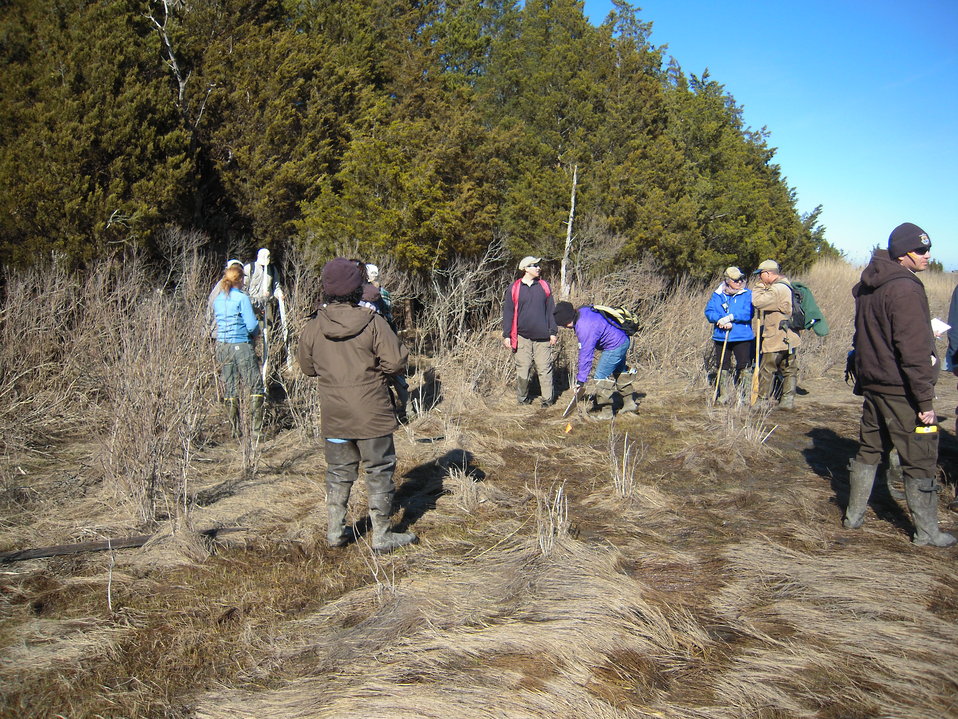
Sea Level Rise

Coastal habitats are expected to migrate to higher ground as sea levels rise.